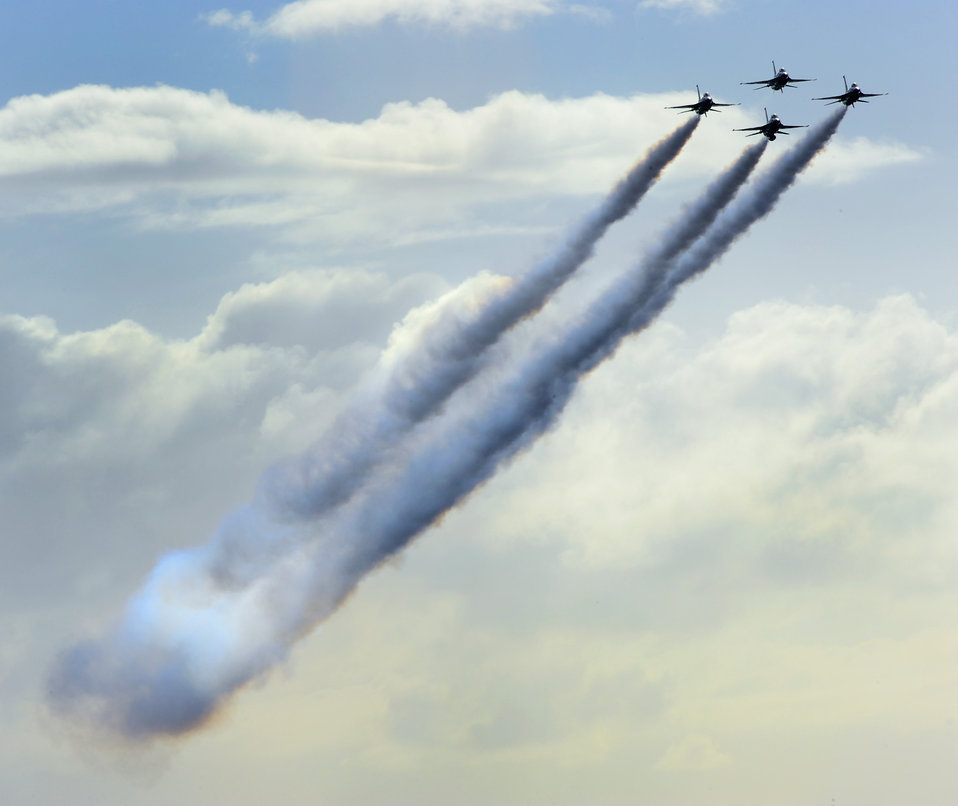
Off we go, into the wild blue yonder ...

The U.S. Air Force Air Demonstration Squadron Thunderbirds begin an aerial demonstration for AirFest at MacDill Air Force Base, Fla., Nov. 6, 2011. MacDill was the host to aerial demonstrations, static displays and the Air Force Thunderbirds, giving the Tampa Bay community the opportunity to witness firsthand the capabilities of the armed forces.